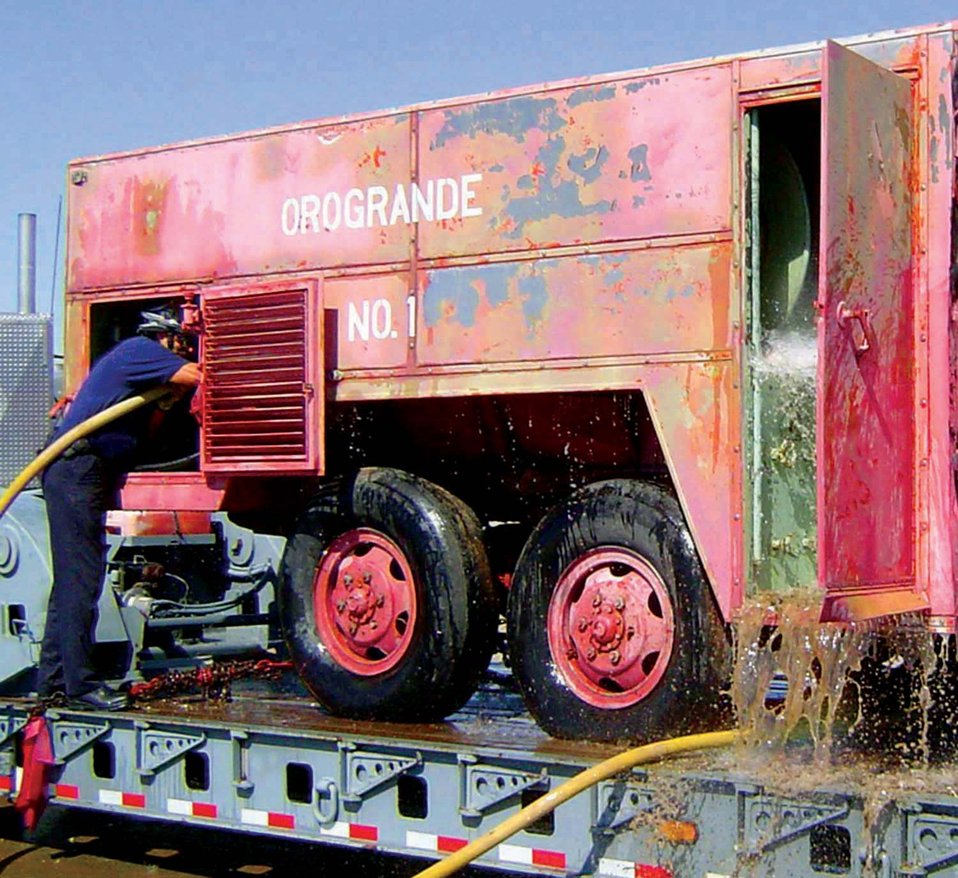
Firefighting history

HOLLOMAN AIR FORCE BASE, N.M. -- Larry Daniels, a Holloman firefighter, cleans out the O-6 Cardox fire crash truck after it was donated by a local firefighter's union. The truck sat for 30 years and was infested by rodents and covered in sand. Firefighters here restored the vehicle and donated it to the military firefighter's heritage museum at Goodfellow Air Force Base, Texas.